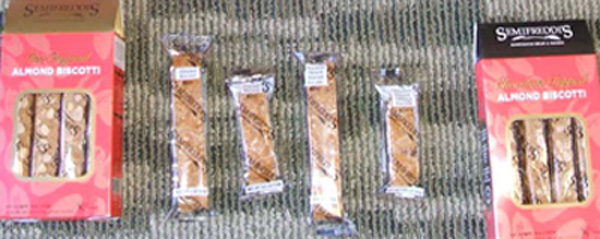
RECALLED – Biscotti

September 16, 2013 – Product Recall – Semifreddi's Announces Voluntary Recall of Almond Biscotti and Chocolate Dipped Almond Biscotti for Undeclared Milk and Soy.